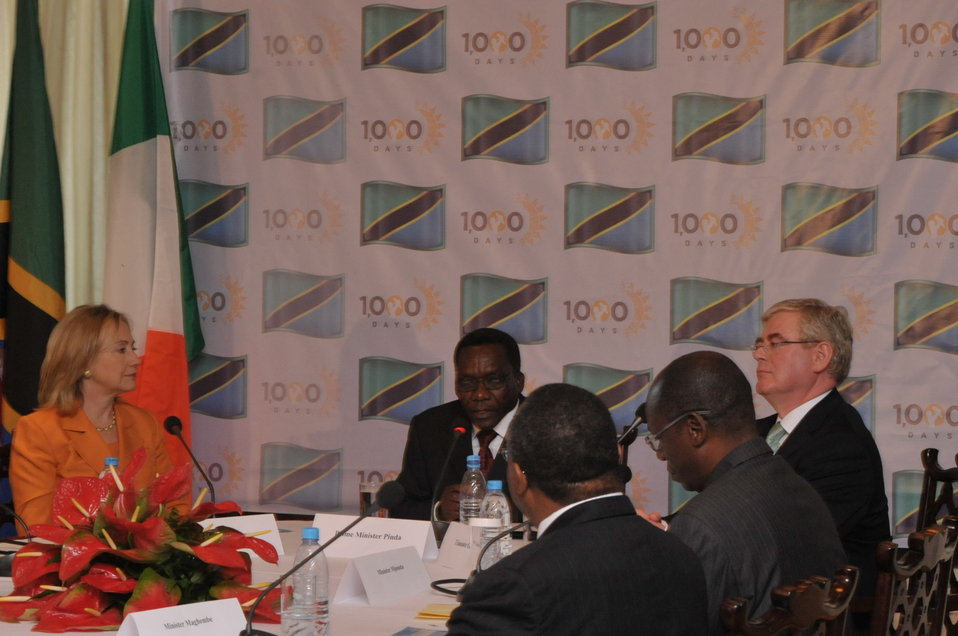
Secretary Clinton Meets With Tanzanian Prime Minister Pinda and Irish Deputy Prime Minister Gilmore

U.S. Secretary of State Hillary Rodham Clinton, left, meets with Tanzanian Prime Minster Mizengo Pinda, center, and Irish Deputy Prime Minister Tanaiste Eamon Gilmore, right, at the High-Level Meeting on Nutrition and 1,000 Days Initiative in Dar es Salaam, Tanzania, on June 12, 2011.